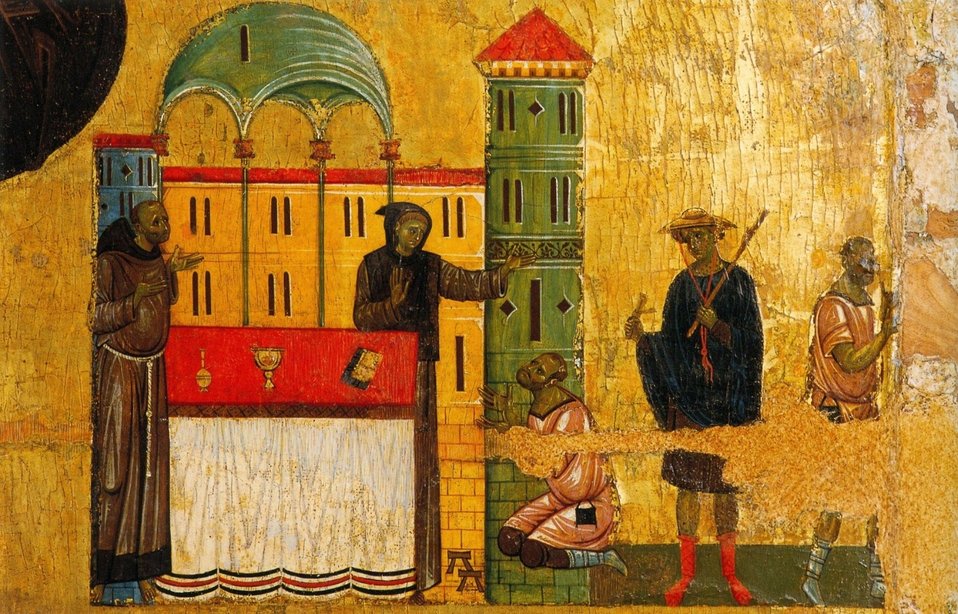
5 Giunta Pisano. St. Francisc and six stories from his life. Detail. Ca. 1250-60. Museo San Matteo, Pisa.